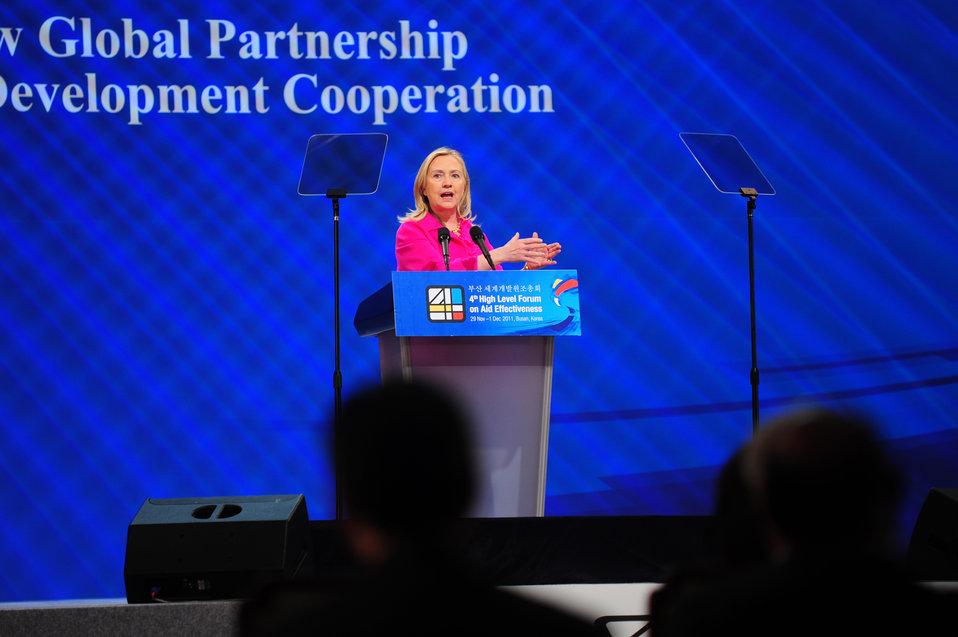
Secretary Clinton Delivers a Keynote Address

U.S. Secretary of State Hillary Rodham Clinton delivers a keynote address at the opening ceremony of the Fourth High-Level Forum on Aid Effectiveness (HLF4) in Busan, South Korea, on November 30, 2011.